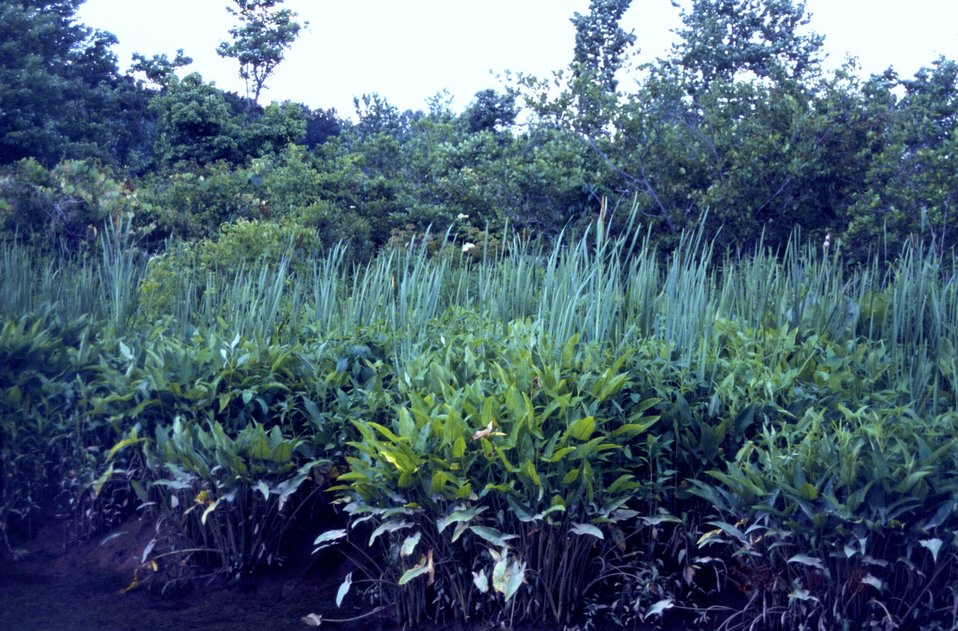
Lush wetland flora along the Patuxent River.